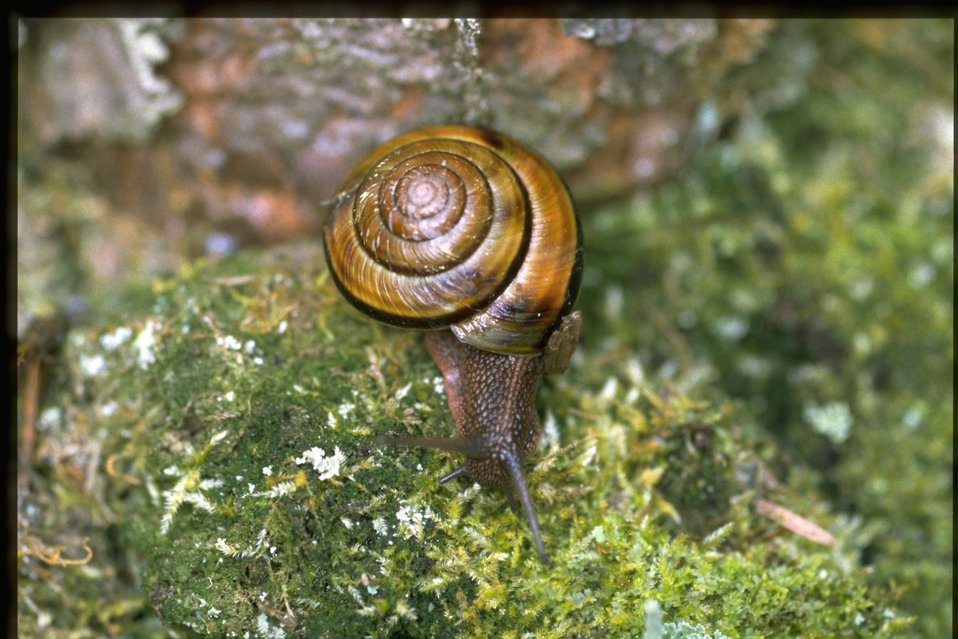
Closeup shot of snail.